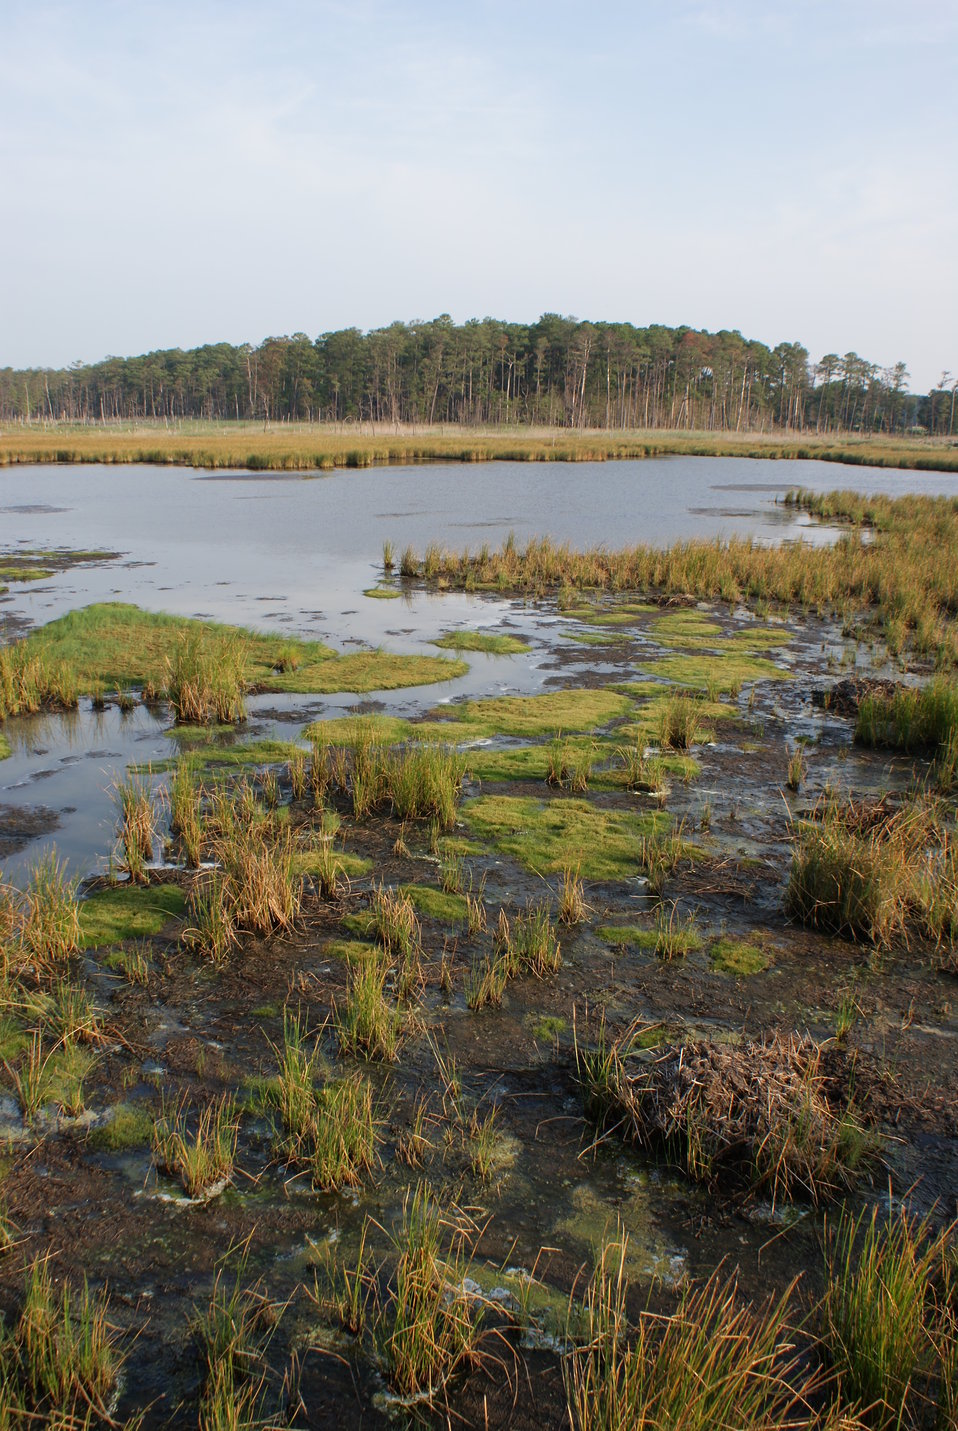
Blackwater National Wildlfe Refuge

Three square and a muskrat lodge in the foreground and loblolly pine in the background. Photographed from the observation platform along the wildlife drive.